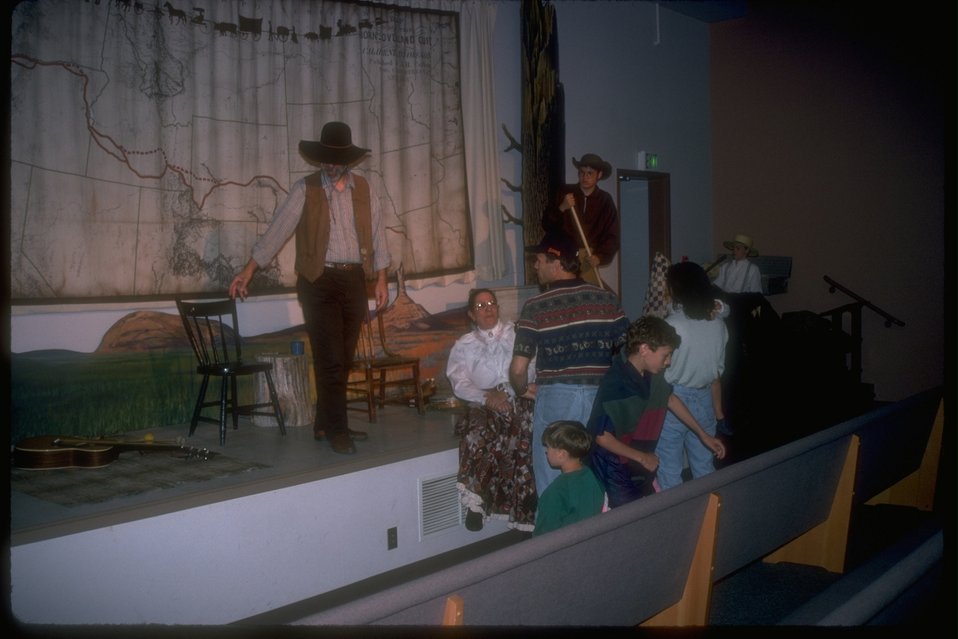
A presentation of living history in the Leo Adler Theater showing life as a pioneer in early Oregon settlement. This is a program and for the background, a large historical map of Oregon.